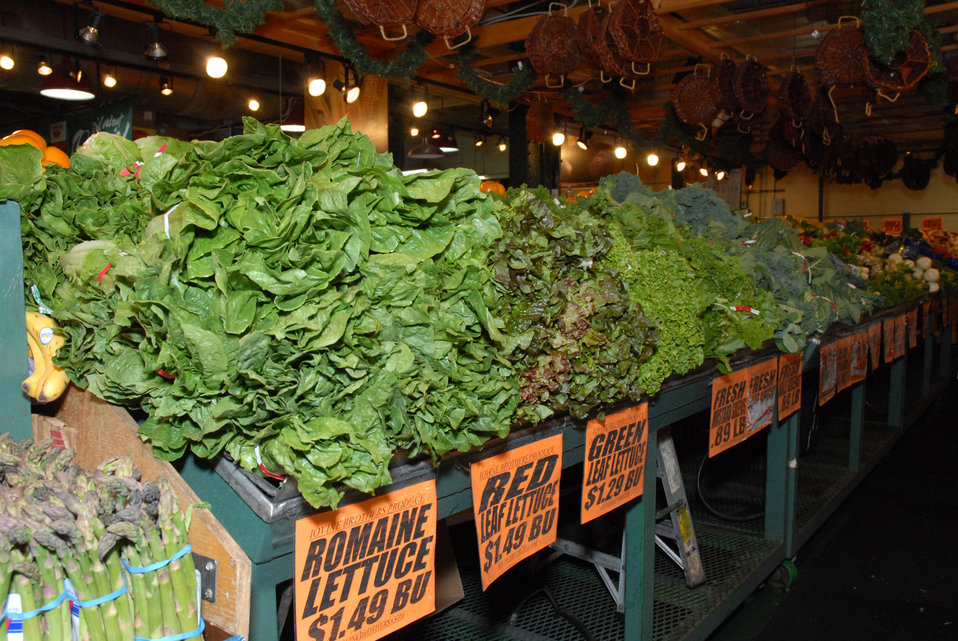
The Reading Terminal Market offers produce fresh from the field to the people of Philadelphia, Pennsylvania on March 26, 2007. There are Amish specialties, fruits, vegetables, meats, seafood, and poultry. Reading Terminal Market opened for business in 1892 with approximately 78,000 square feet and almost 800 spaces for vendors. The Market was revitalized in the 1990’s and today is still the gastronomic bazaar that its original planners had envisioned. Many of the historic Market stands survived the reconstruction and are once again filled with local produce, fresh eggs, milk, meats, poultry, seafood, handmade crafts, jewelry, and clothing. The Market is home to more than 80 merchants, two of whom are descendants of the original stand holders from a century before.